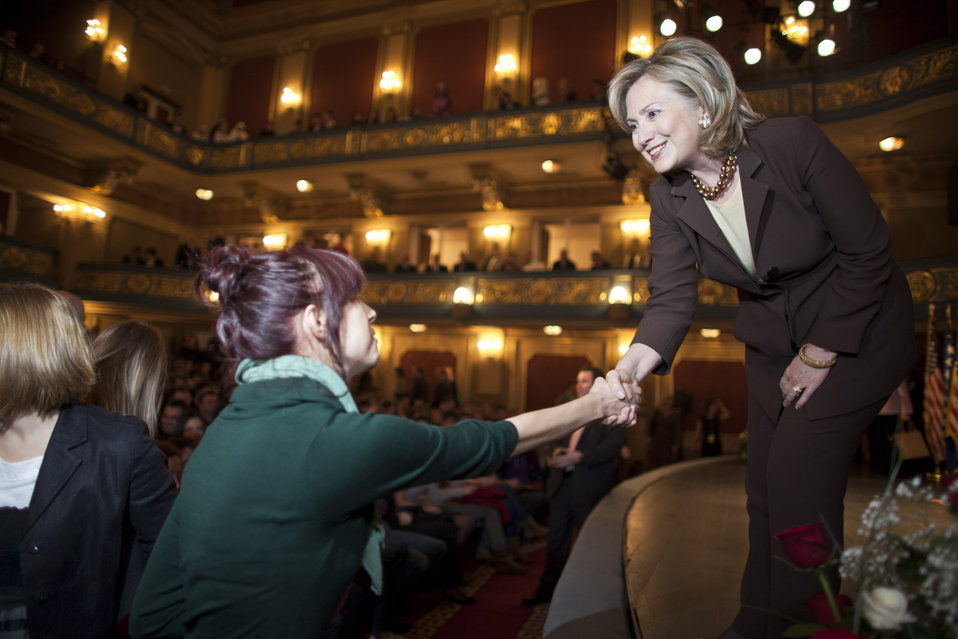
Secretary Clinton Shakes Hands With a Student

U.S. Secretary of State Hillary Rodham Clinton shakes hands with a student at the town hall meeting with university students and civil society representatives, at the National Theater, in Sarajevo, Bosnia and Herzegovina, on October 12, 2010.